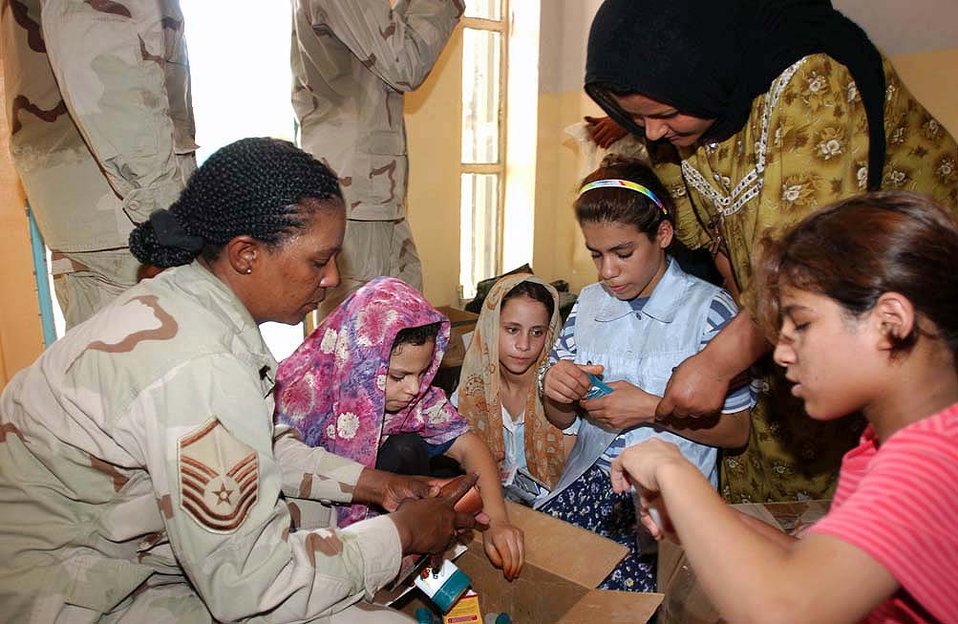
Volunteering

AN NASIRIYAH, Iraq -- Master Sgt. Sylvia Goodwin helps local children sort through the contents of one of the boxes delivered to local orphanages. She is the 332nd Expeditionary Communications Squadron's post office postmaster. Airmen and soldiers from nearby Tallil Air Base delivered supplies to the orphans as part of a local volunteer initiative.